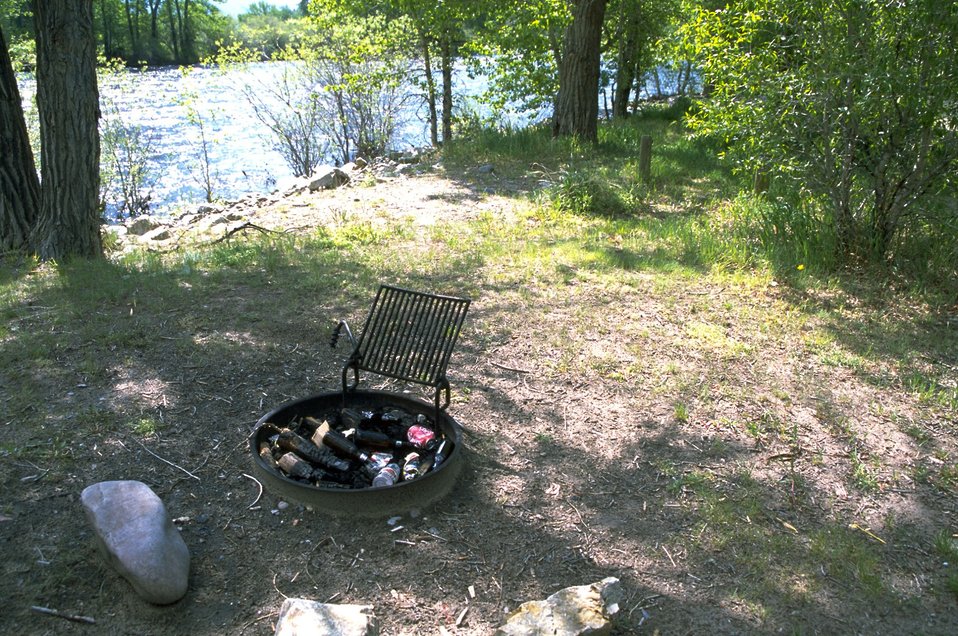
Camp fire grill at Jerry Creek Day Use Area